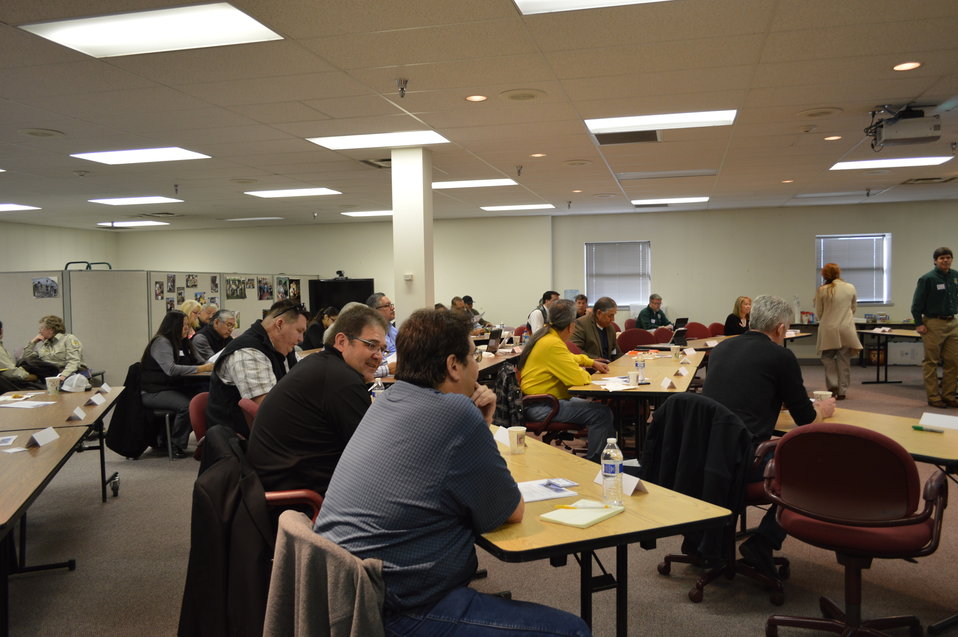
Eagle Summit III

Attendees at the Eagle Summit III in Denver, Colorado on March 20, 2014 at the Rocky Mountain Arsenal National Wildlife Refuge.